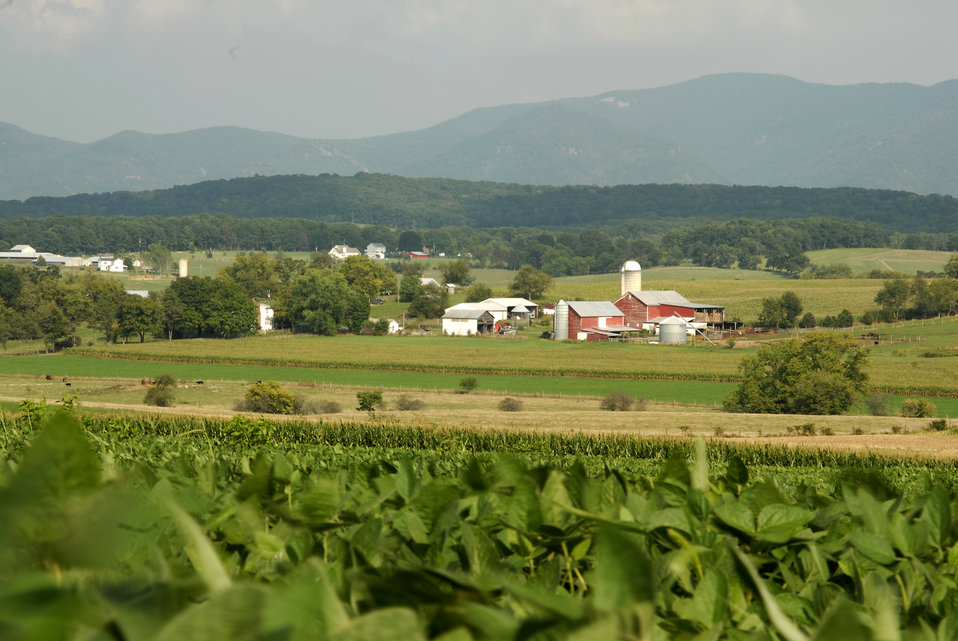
Fall is harvesting time on a farm in Augusta County, Virginia on September 9, 2008.